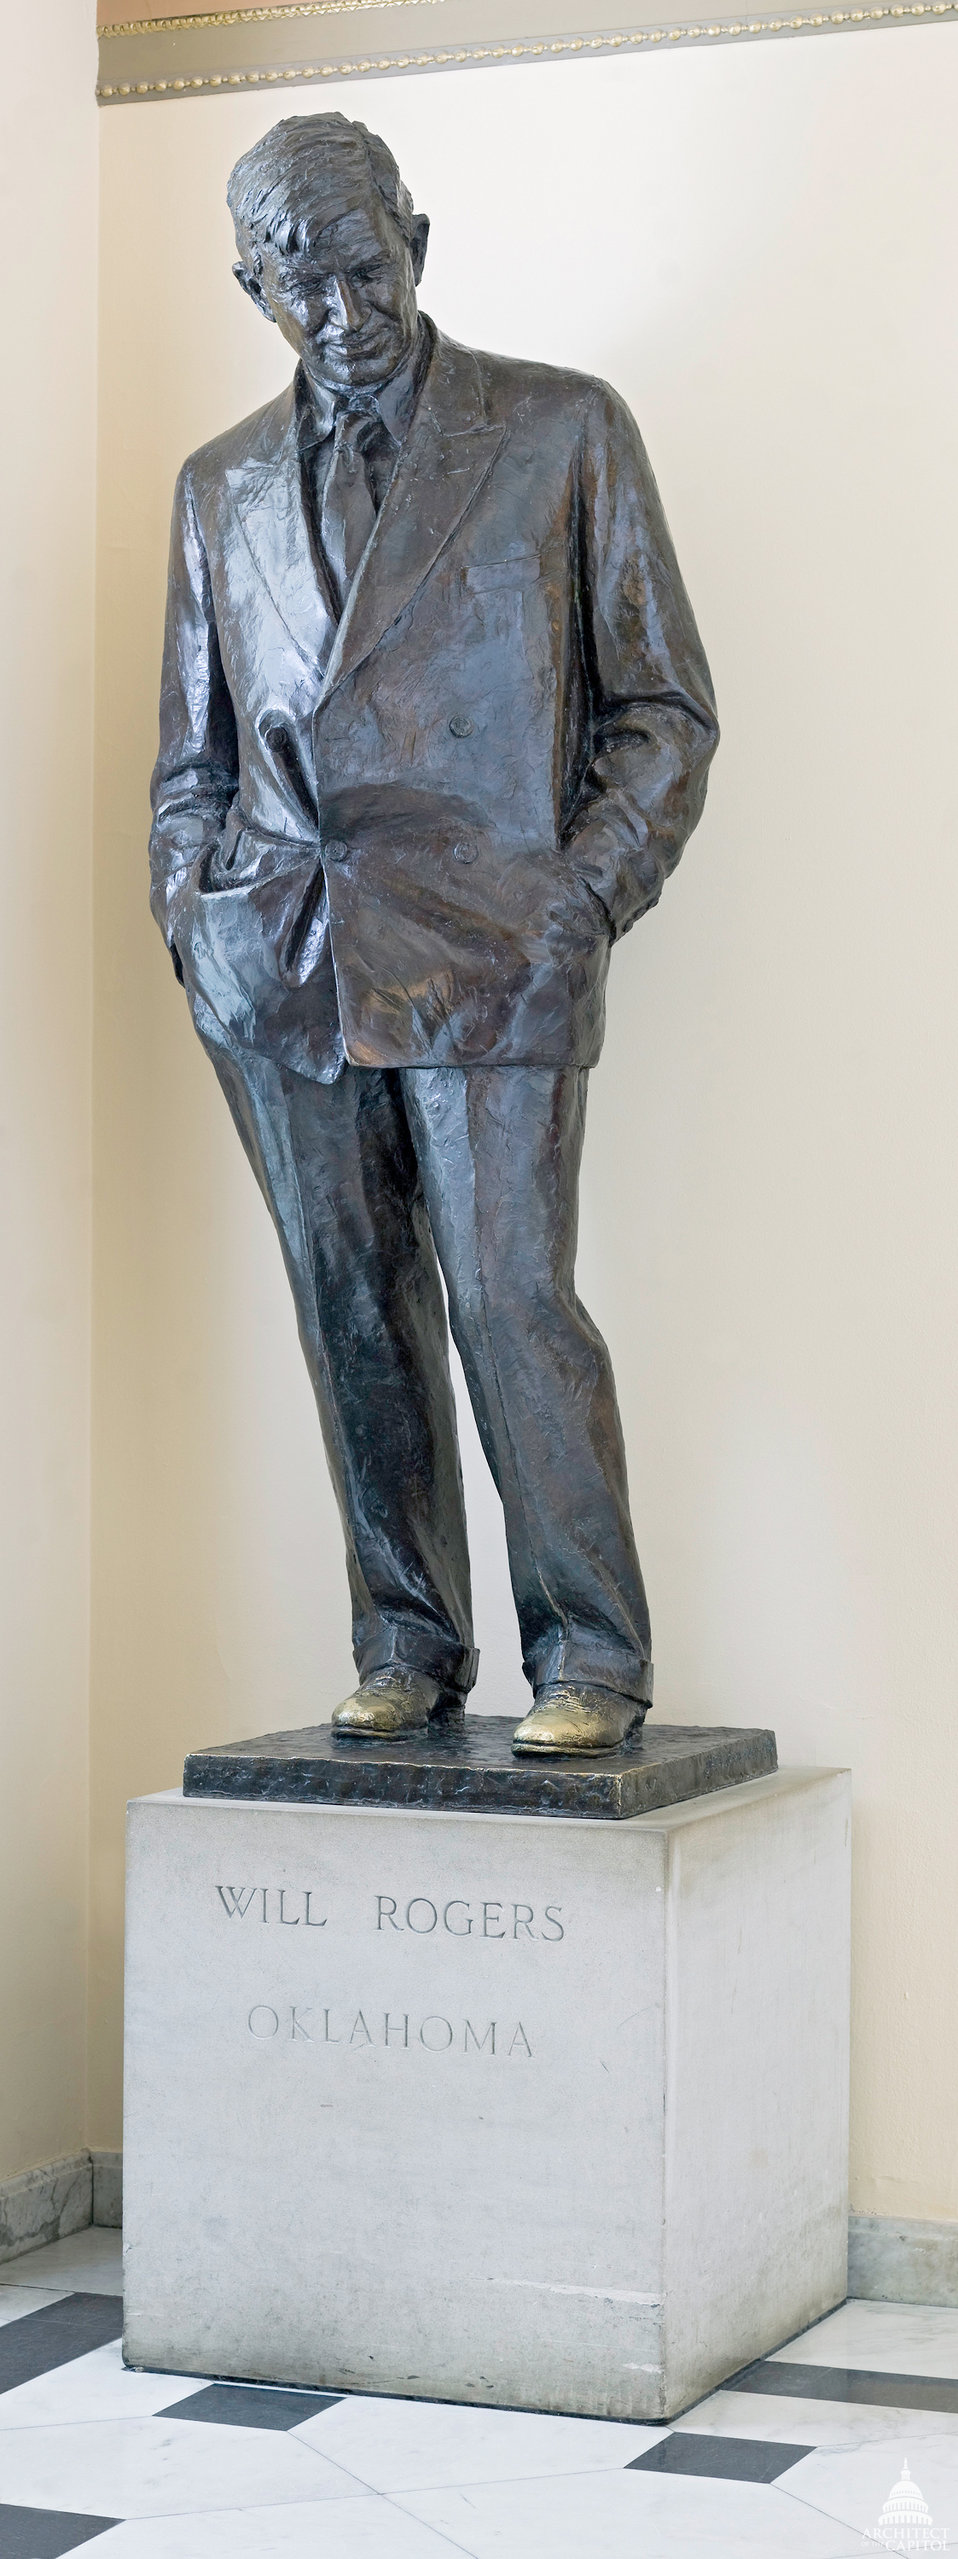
Will Rogers Statue

Will Rogers (1879-1935)
Oklahoma
Bronze by Jo Davidson
Given in 1939
House connecting corridor, 2nd floor
U.S. Capitol